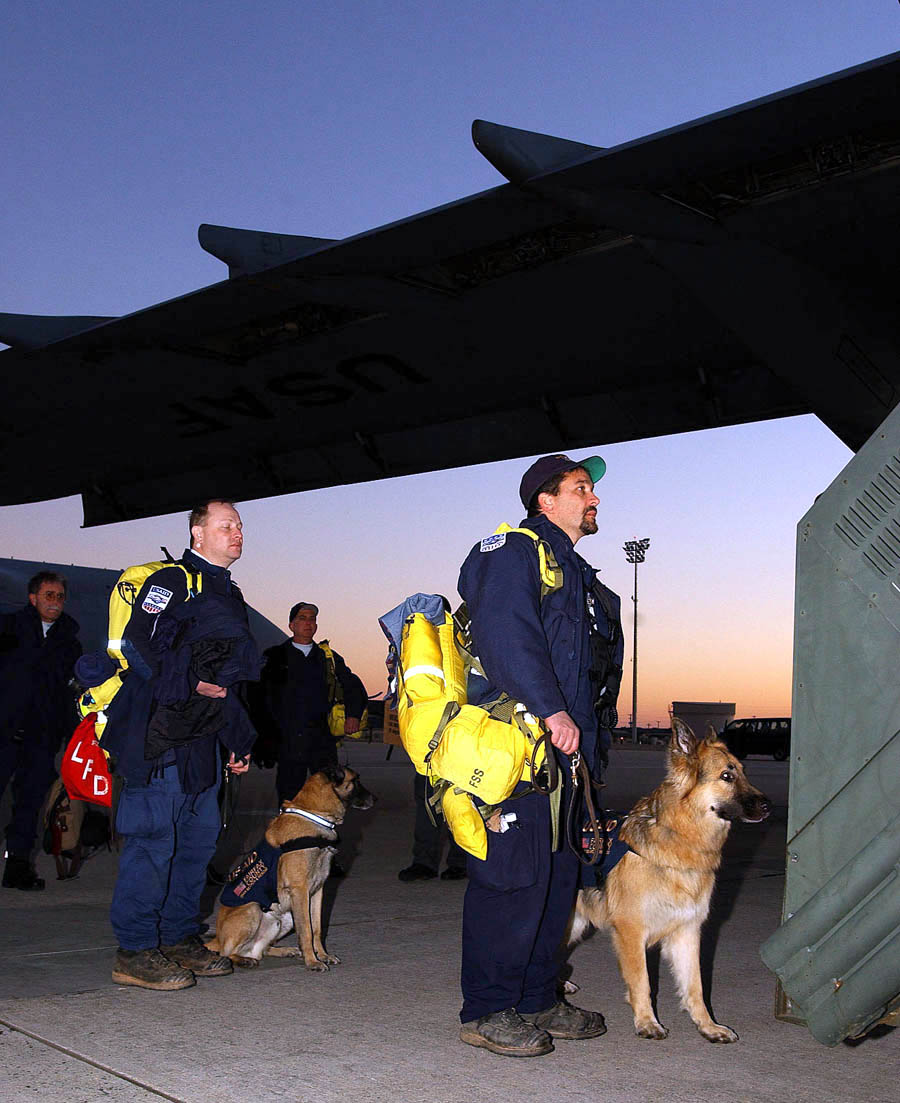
Help is on the way

DOVER AIR FORCE BASE, Del. -- Members of Virginia's Fairfax County Urban Search and Rescue Team board a C-5 Galaxy here Dec. 27 en route to assist with rescue and recovery operations following an earthquake in Bam, Iran. A crew from Dover's 9th Airlift Squadron flew the team to Europe on their first leg of the humanitarian mission.